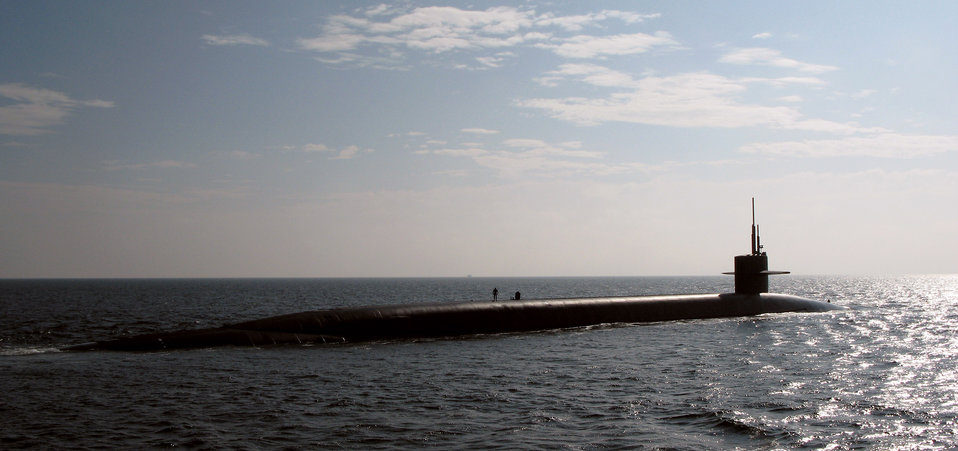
Trident submariners provide strategic deterrence

The sun's rays glint off the hull of the strategic missile submarine USS Maryland as it cruises atop the waves somewhere in the Atlantic Ocean Feb. 15.